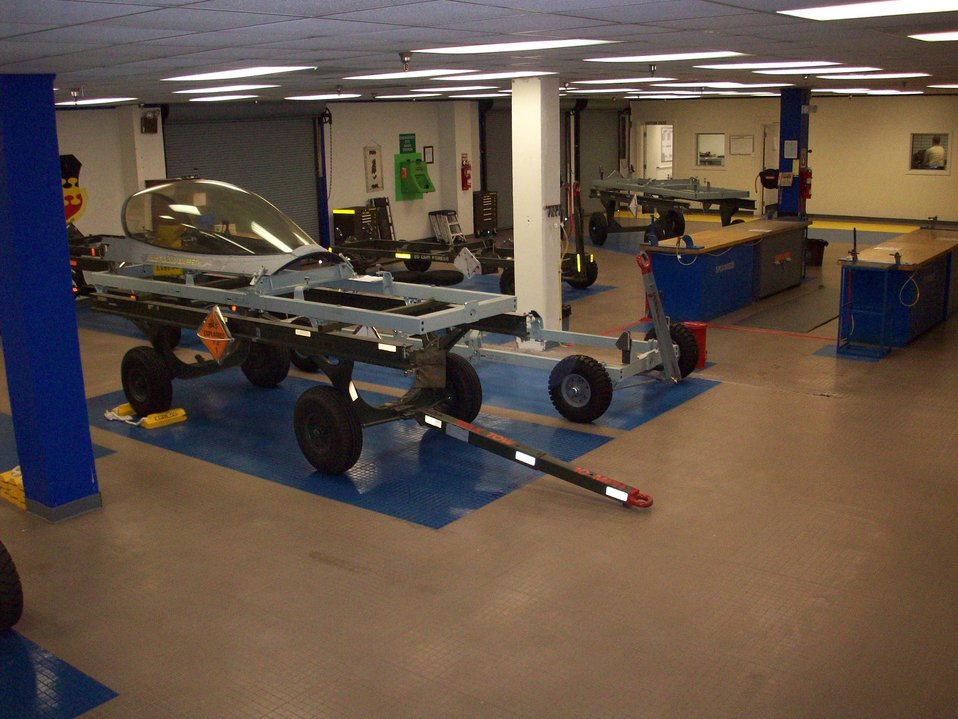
AFSO 21 RIE

Airmen from the 20th Maintenance Group at Shaw Air Force Base, S.C., recently conducted an Air Force Smart Operations for the 21st Century Rapid Improvement Event to improve the egress inspection process for F-16 Fighting Falcon ejection seats.